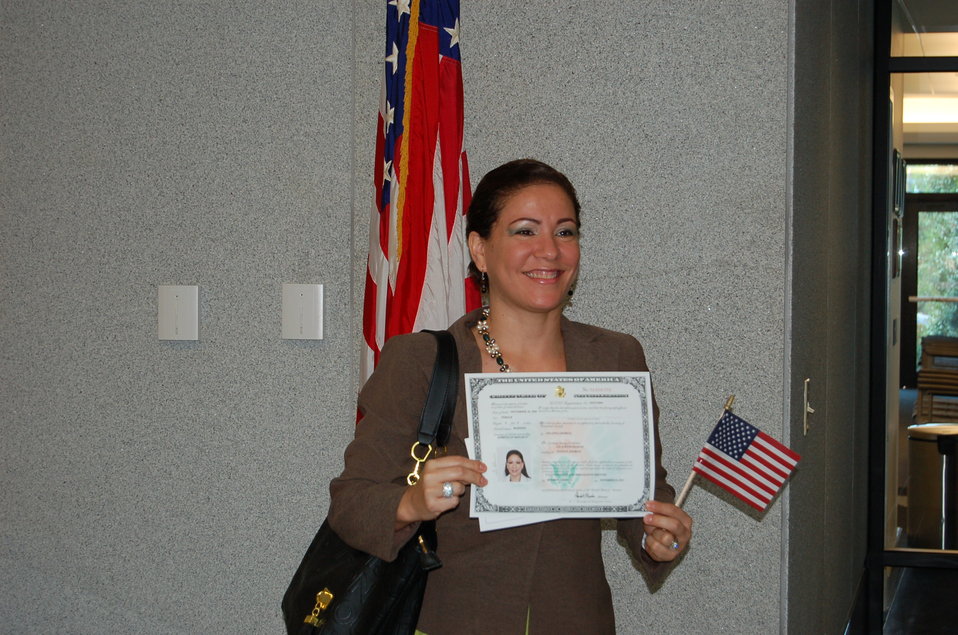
New Citizens